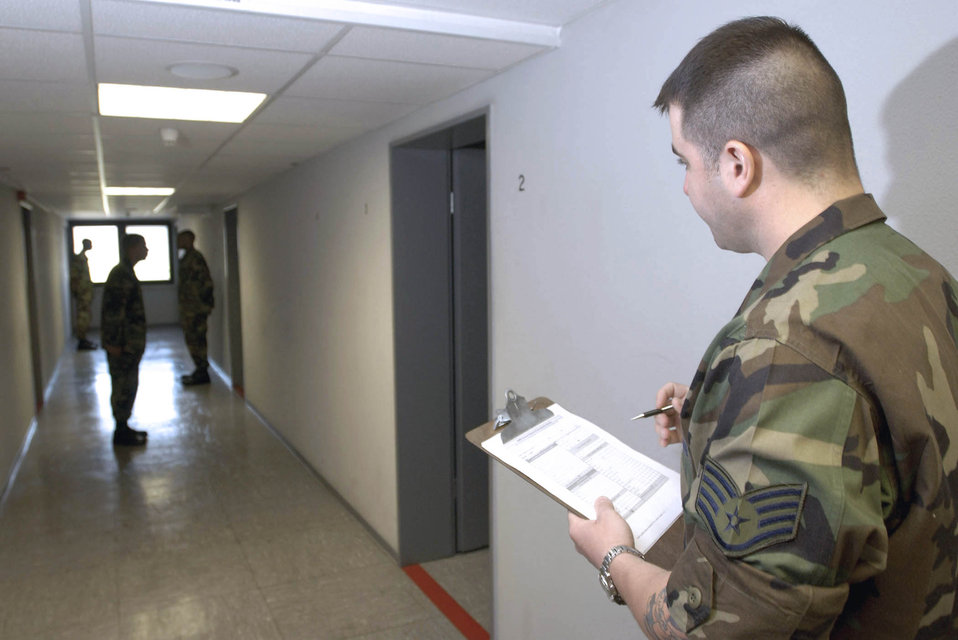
There's no quitting in the Air Force

RAMSTEIN AIR BASE, Germany -- Staff Sgt. Joseph Gallina waits while candidates prepare for uniform inspections during Ramstein's Area Motivational Program. This 30-day program is used by commanders to